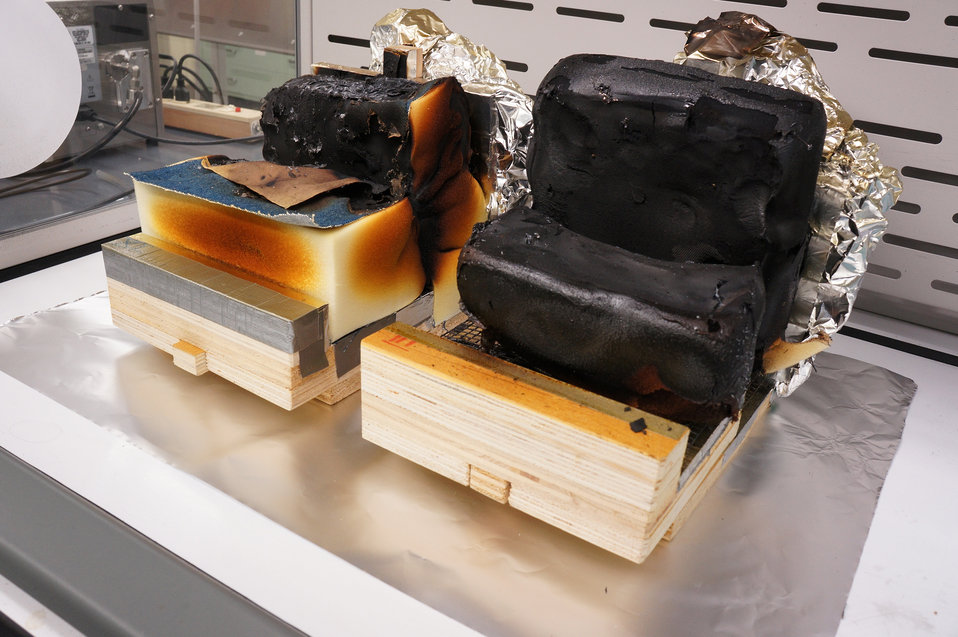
Smoldering Foam Fire Test

Residues of an identical foam-fabric assembly in the current (left) and in the modified (right) smoldering ignition setup (45 min test duration). The new setup promoted an increase in smoldering rate as compared to the current setup and induced transition to flaming.